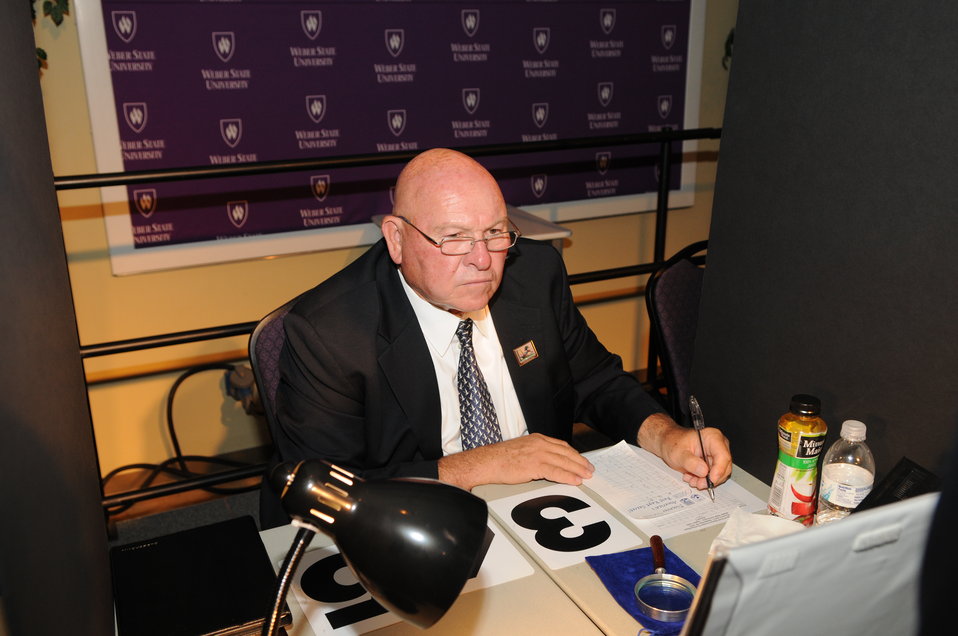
Judging

The U.S. Fish & Wildlife Service sponsored the 2012 Federal Duck Stamp Art Contest September 28 and 29 in Ogden, Utah, at Weber State University. A panel of five judges was responsible for choosing the art work used to design the 2013-2014 Migratory Bird Hunting and Conservation Stamp.